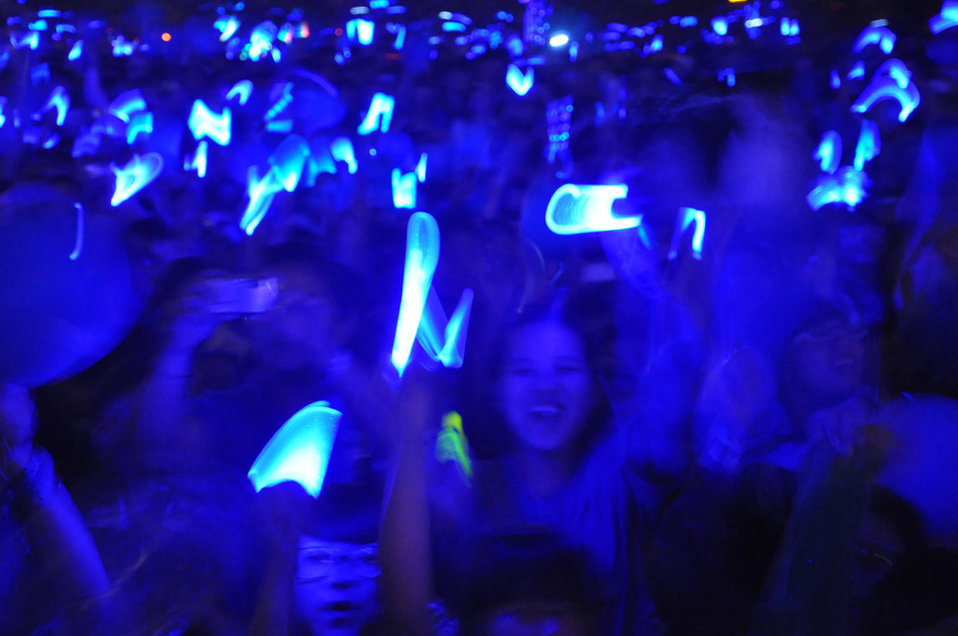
MTV EXIT Hanoi concert March 27, 2010